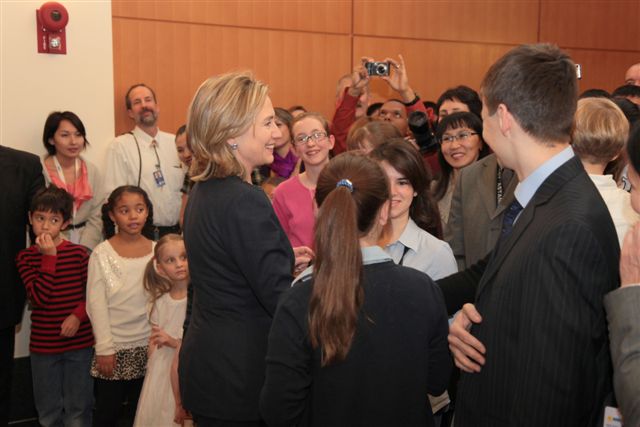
Secretary Clinton Greets Members of the U.S. Embassy Astana Staff

U.S. Secretary of State Hillary Rodham Clinton greets members of the U.S. Embassy Astana staff and their families in Astana, Kazakhstan, on December 1, 2010.